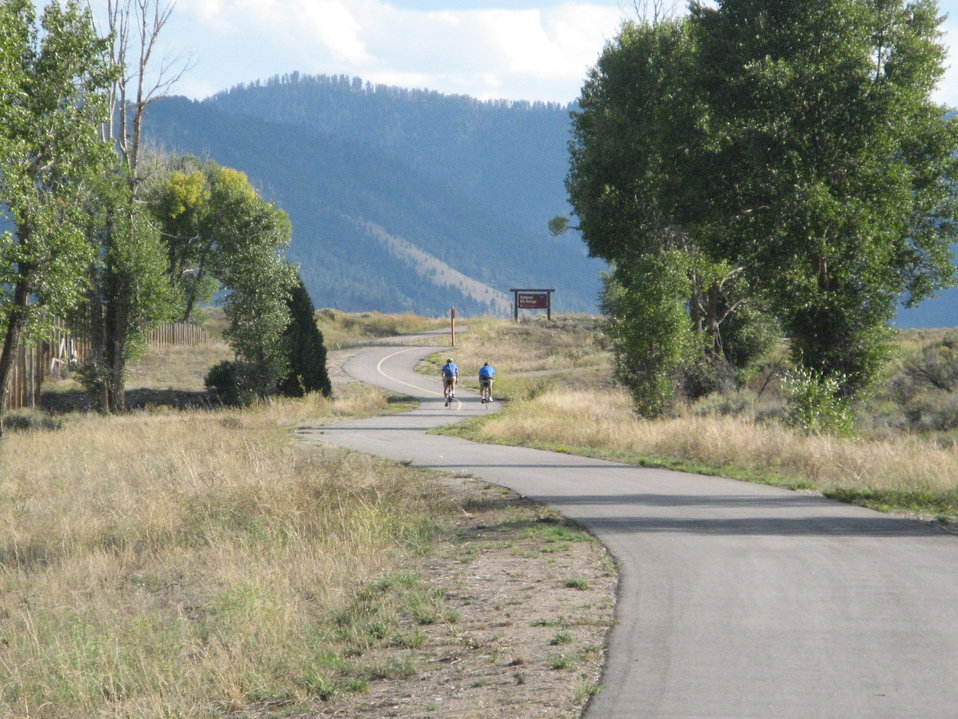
A multi-use pathway on the National Elk Refuge is open to cyclists and pedestrians from May 1 through October 31.